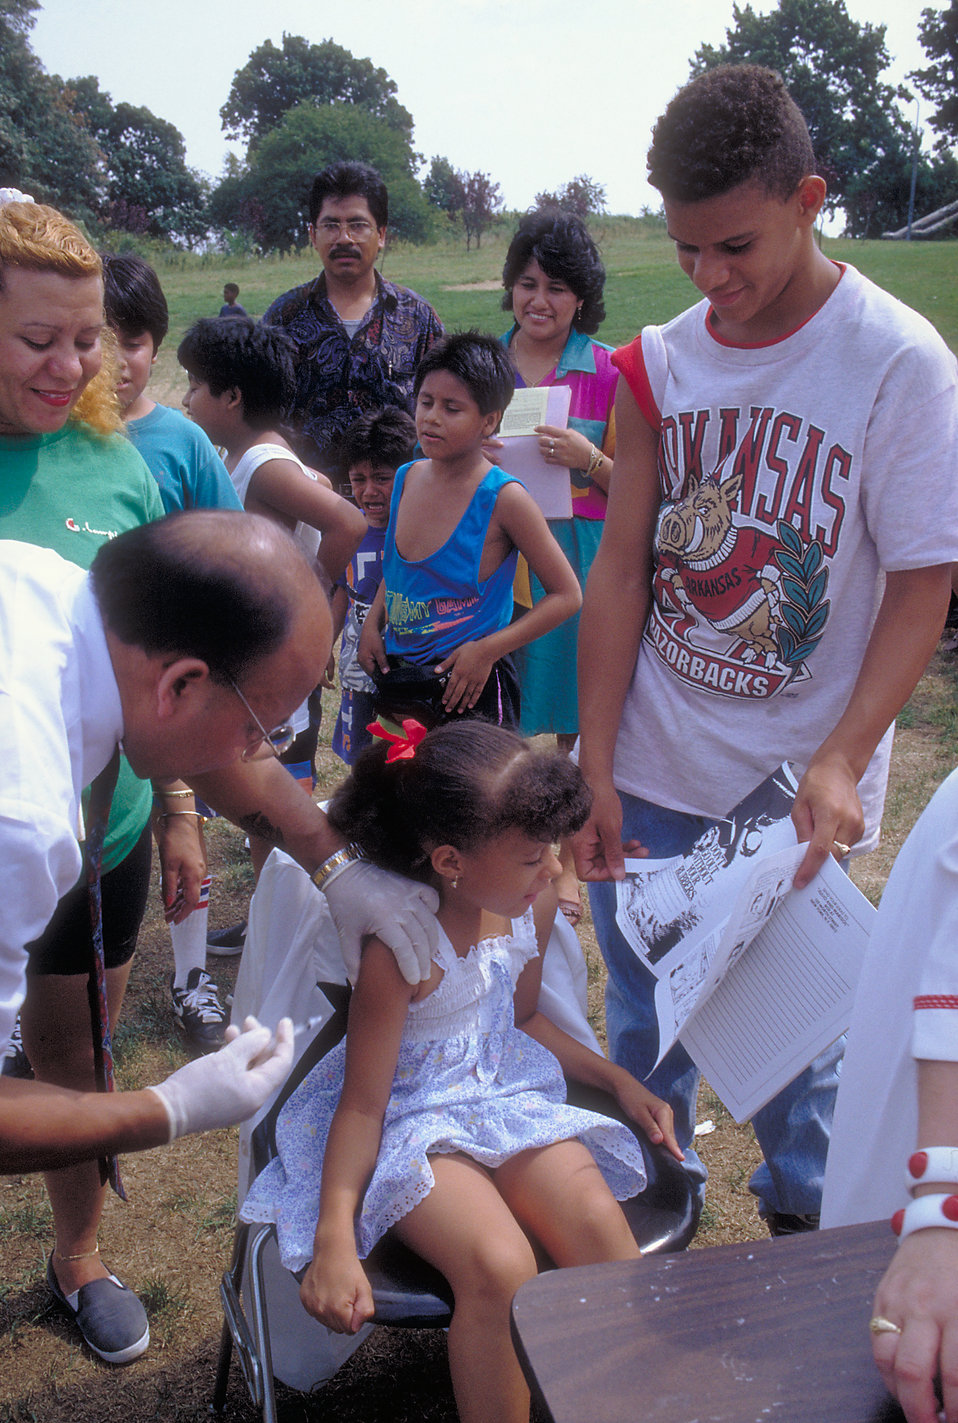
Health worker vaccinating child.